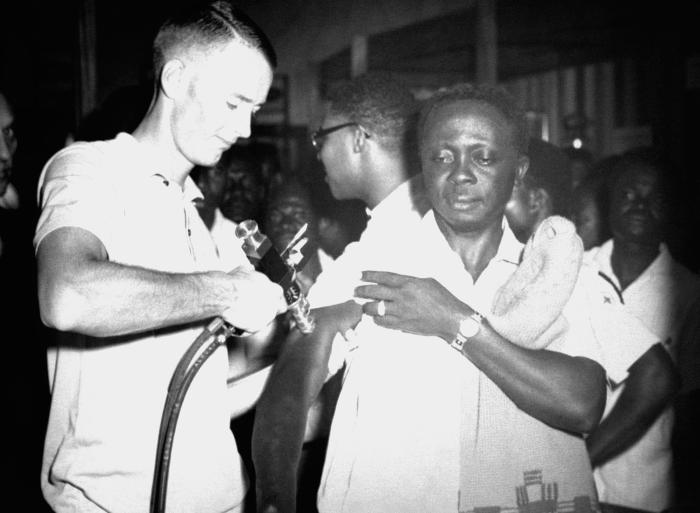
This 1967 photograph depicted the former Carter Center's Global 2000, Director of Operations, the late Andrew Agle, as he vaccinated Beaunie Challenor, M.D. in the country of Togo.